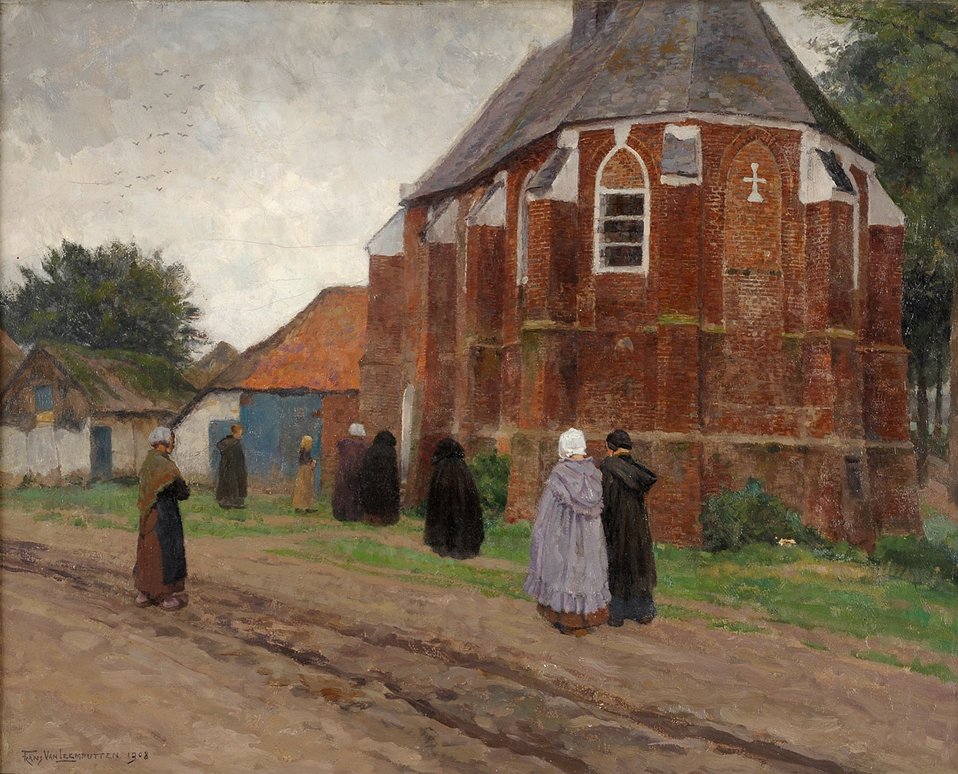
Der Kirchgang. Signiert. Datiert 1908. Öl/Lwd., 53 x 66 cm